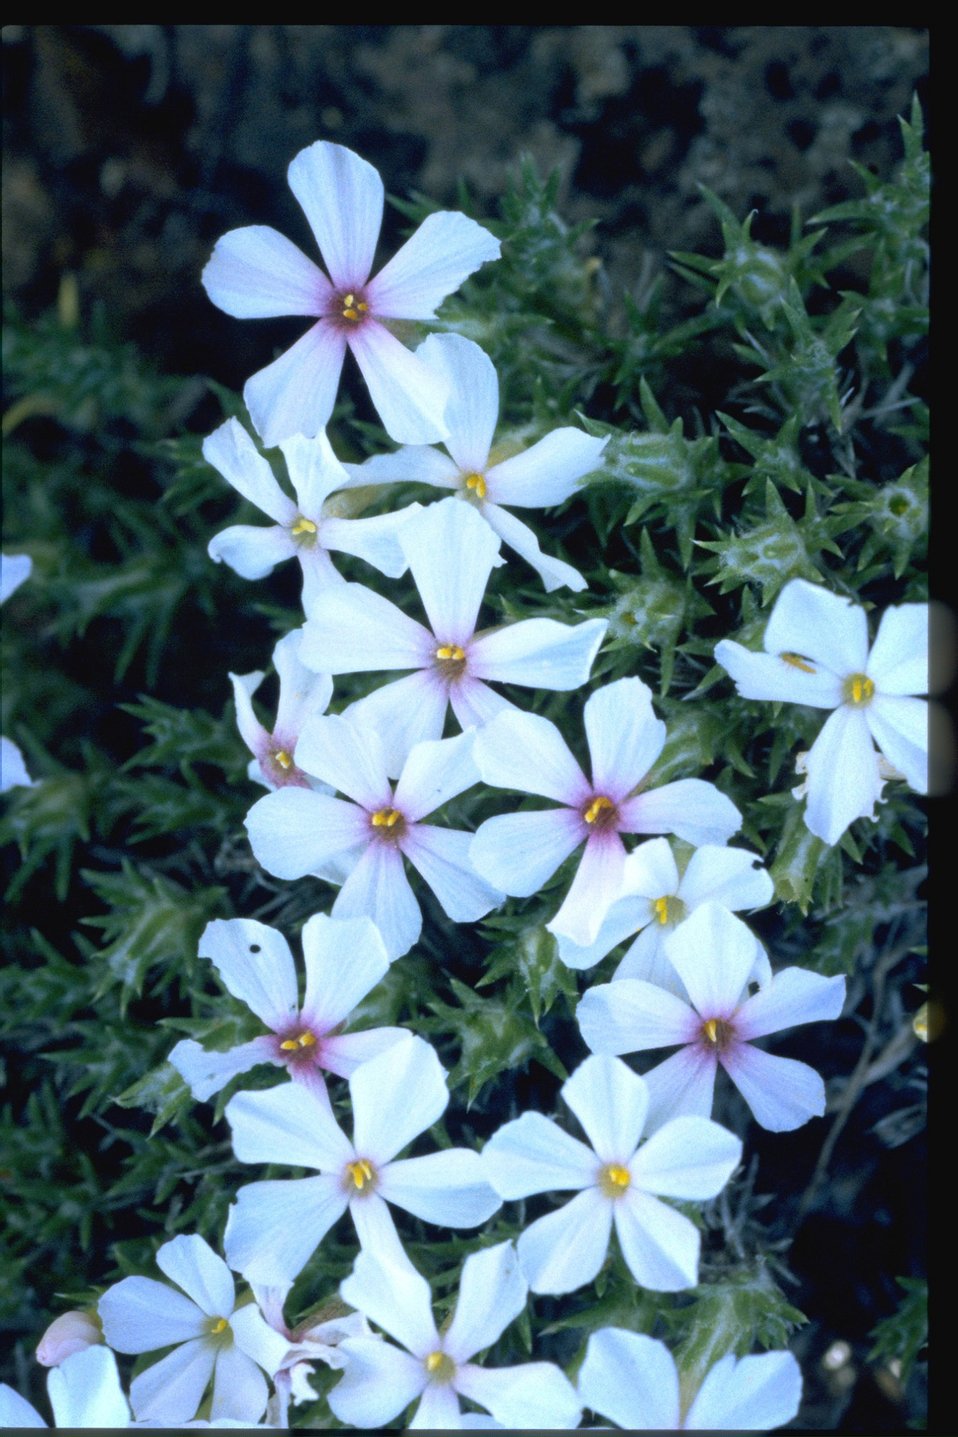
Medium shot of phlox habitat.